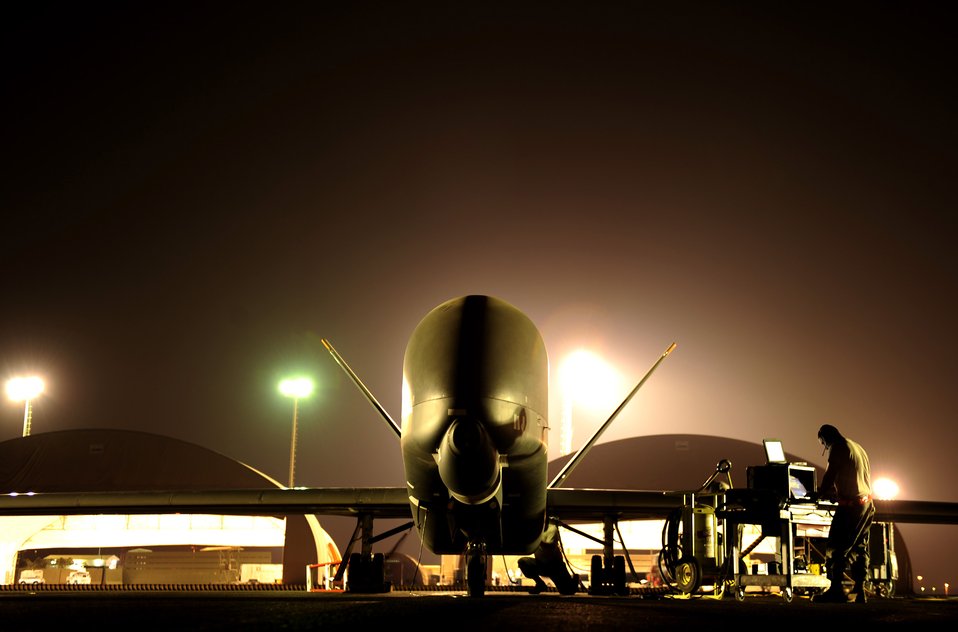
All systems go

A maintenance technician checks the system Nov. 23, 2010, as an RQ-4 Global Hawk gets ready for a mission while deployed at an air base in Southwest Asia. The RQ-4 and Airmen are assigned to the 380th Expeditionary Operations Group.